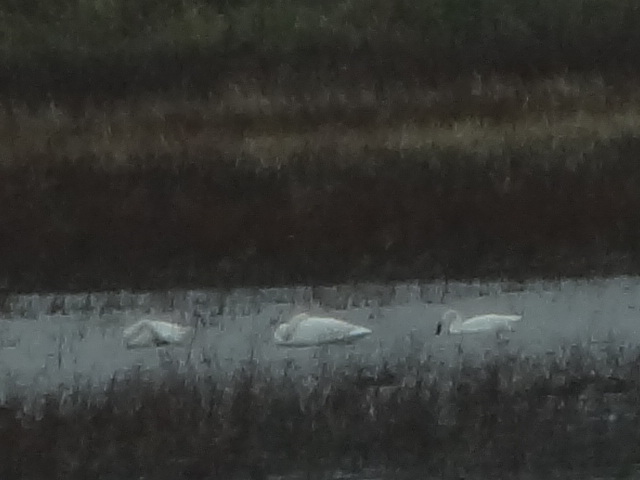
Trumpeter Swans on Marais des Cygnes State Area, Kansas

'Marais des Cygnes' is French for 'Marsh of the swans.' These Trumpeter Swans were spotted on state land on the western boundary of the Refuge.